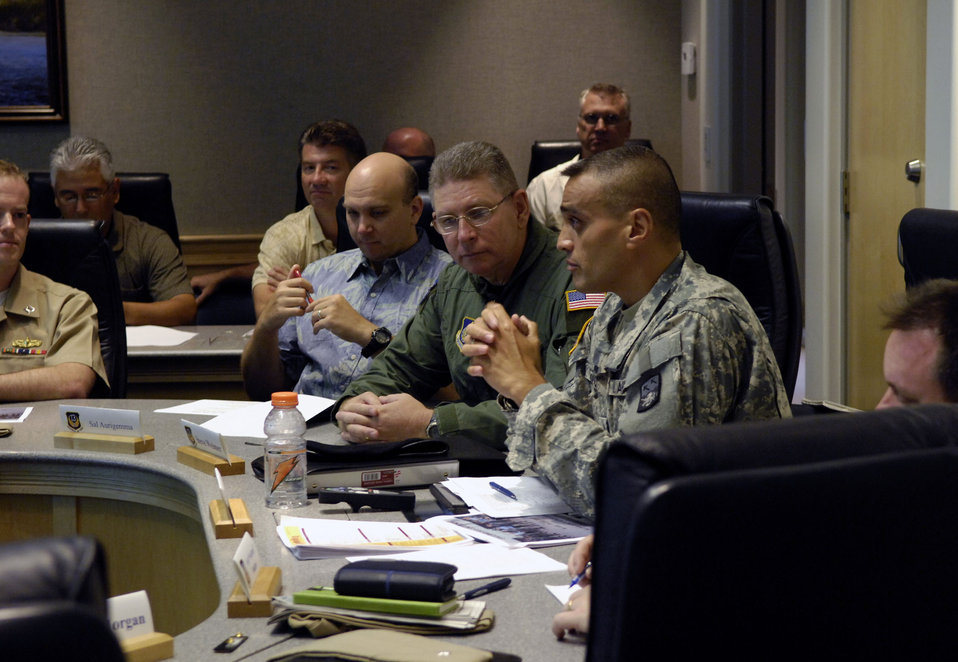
Missile defense experts meet in Hawaii

Army Chief Warrant Officer Samuel Ngaropo delivers opening remarks at the Joint Interface Control Officer Conference July 16 at Hickam Air Force Base, Hawaii. The conference is a four-day event involving joint interface control officers and ballistic missile defense experts from across the Pacific Command to focus on integrating assets and capabilities to form a stronger alliance and interoperability for the future.